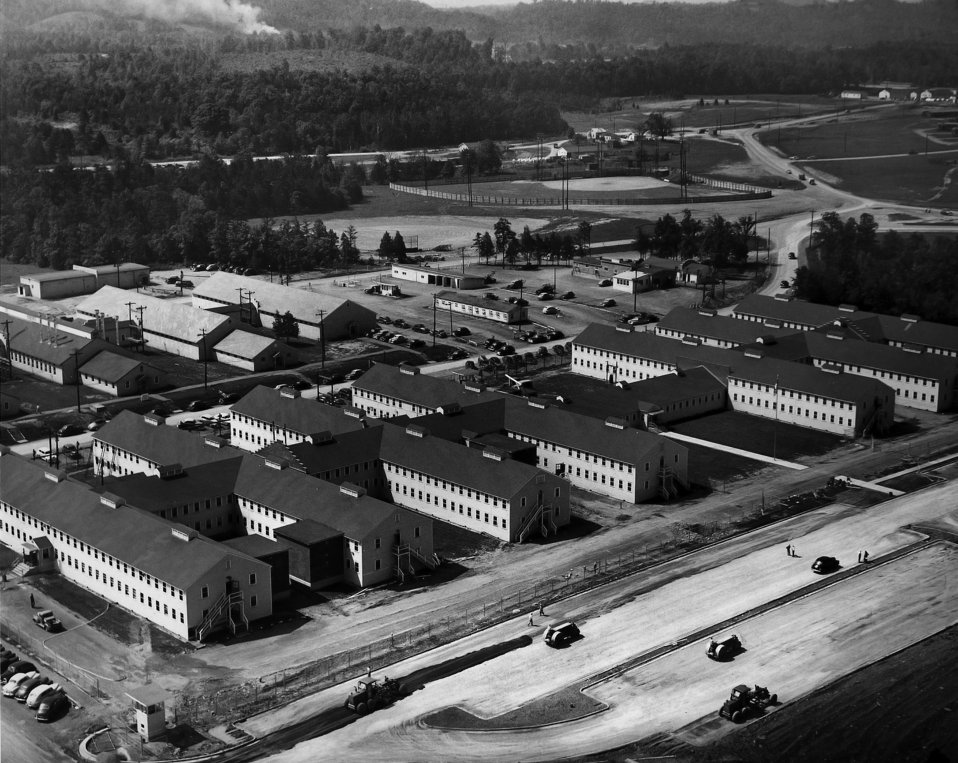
Air View AEC Admin. Bldg. Oak Ridge

5114 DOE photo by Ed Westcott 7-21-1948 Oak Ridge Tennessee